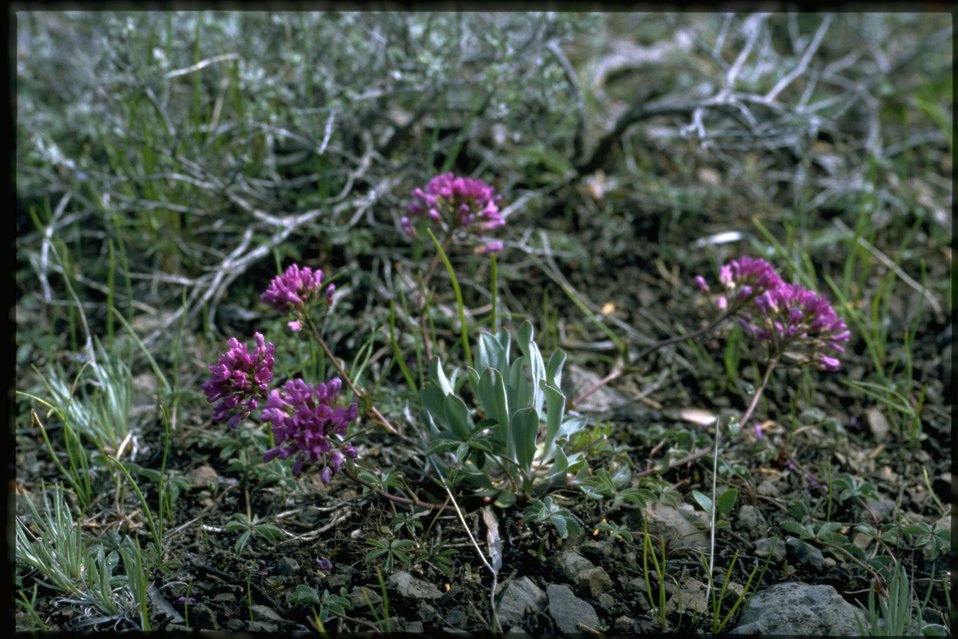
Farshot of daggerpod, Phoenicaulis Cheiranthoides, wildflowers.